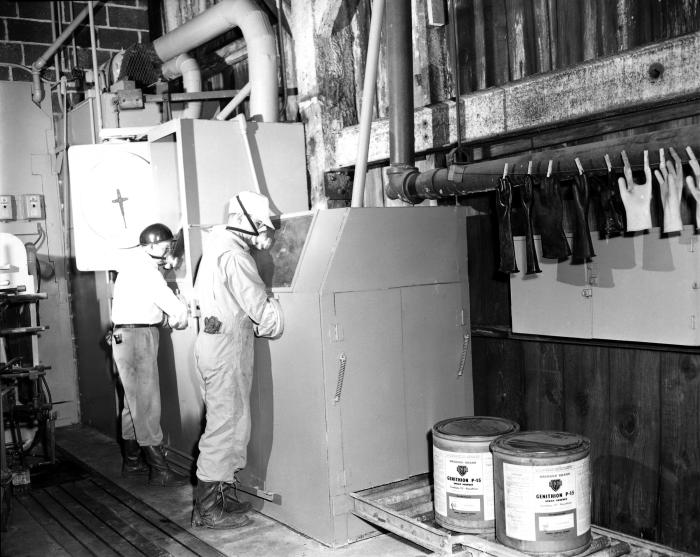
This 1946 historical photograph was provided by the Center for Disease Control's (CDC), National Institute for Occupational Safety and Health (NIOSH). The photo showed workers whose job it was to formulate spray-pesticides. They were mixing the powdered constituents into a liquid. The mixing was occurring in closed chambers equipped with exhaust ventilation systems. In addition to the ventilation, the workers were also wearing respirators and rubber gloves, in order to help prevent overexposure and poisoning. The pesticide pictured was Genithion P-15, an insecticide that is a variant of parathion. Activities such as this need stringent oversight by a regulating body such as NIOSH, which would make the health and welfare of such workers a paramount concern.